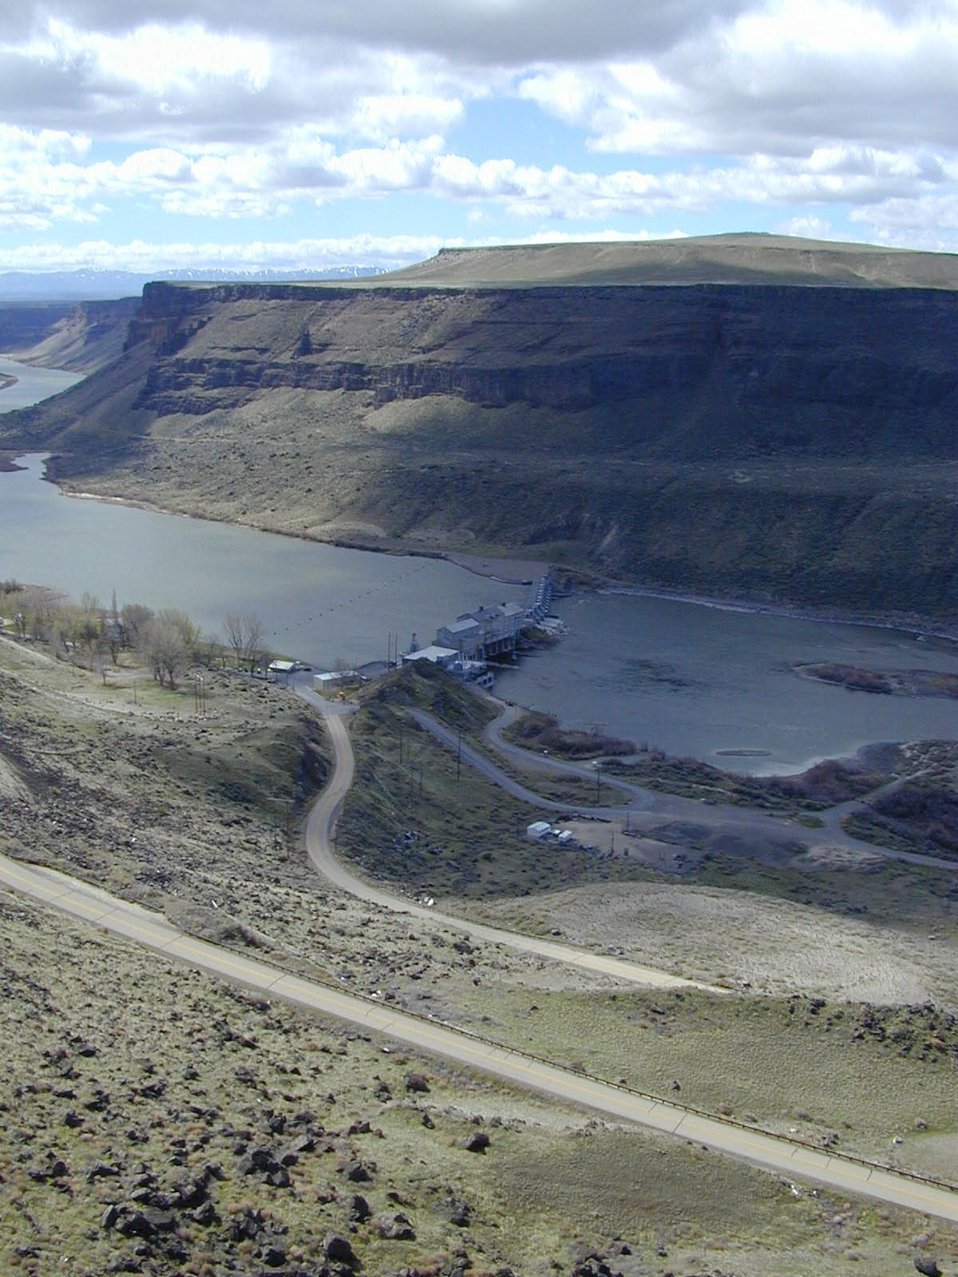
Scenic Snake River Birds of Prey National Conservation Area Lower Snake River District LSRD Snake River Canyon